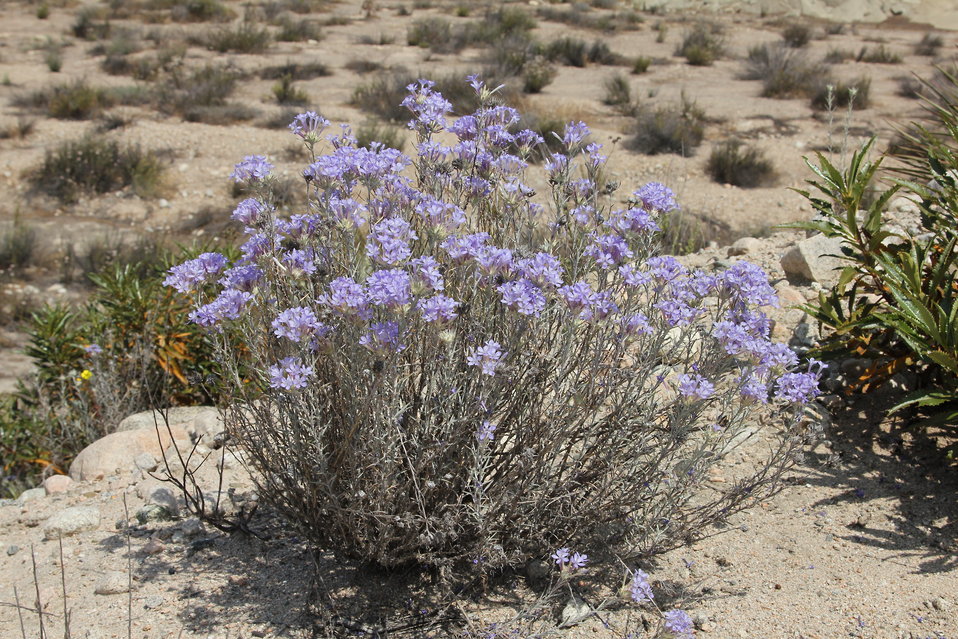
Santa Ana River woolly star (Eriastrum densifolium ssp. sanctorum)
is a shrub that can grow to about 3 feet in height. This plant is restricted to the Santa Ana River drainage in southern California.